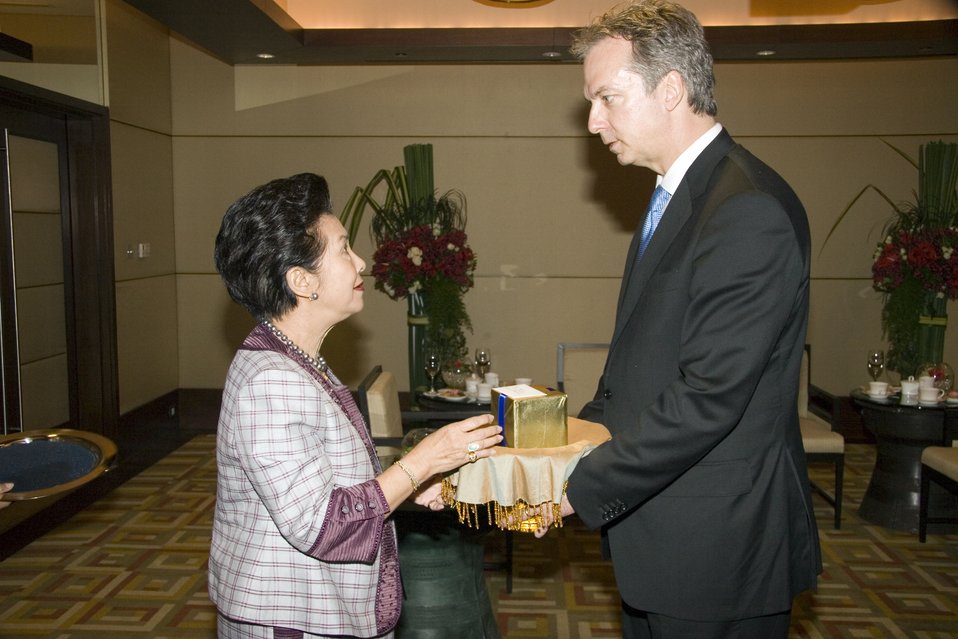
U.S. Ambassador to Thailand Meets With Thai Queen’s Lady-in-Waiting

U.S. Ambassador to Thailand Eric G. John presents a gift to the Queen’s Lady-in-Waiting, Thanpuying Nravadi Chaixanien, at the Conrad Hotel in Bangkok, Thailand July 21, 2009.